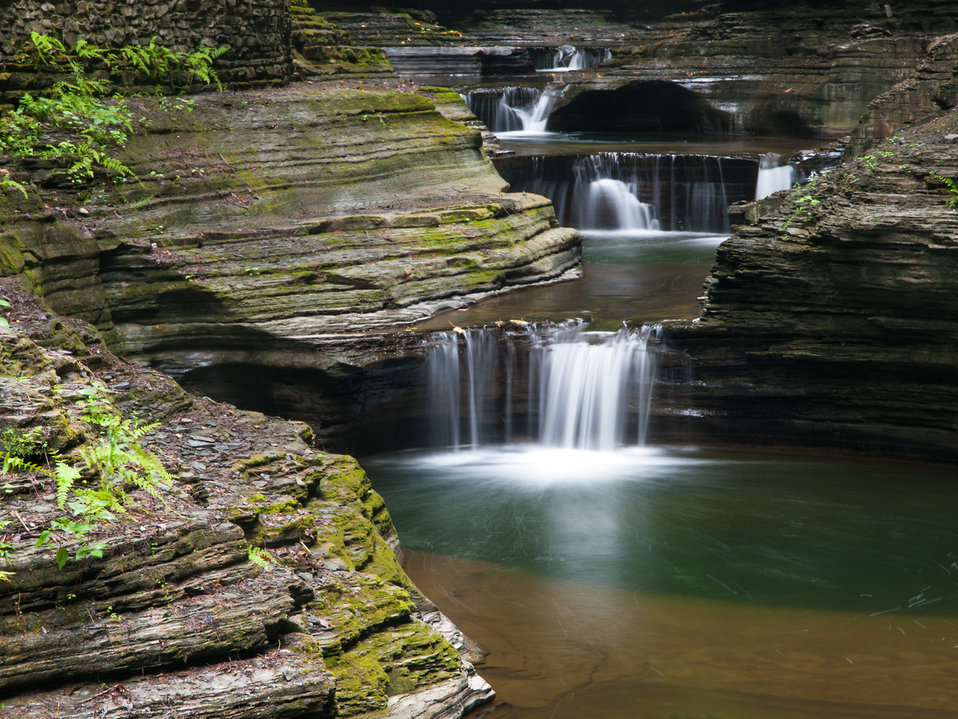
Waterfalls

Photographed in Watkins Glen, NY.